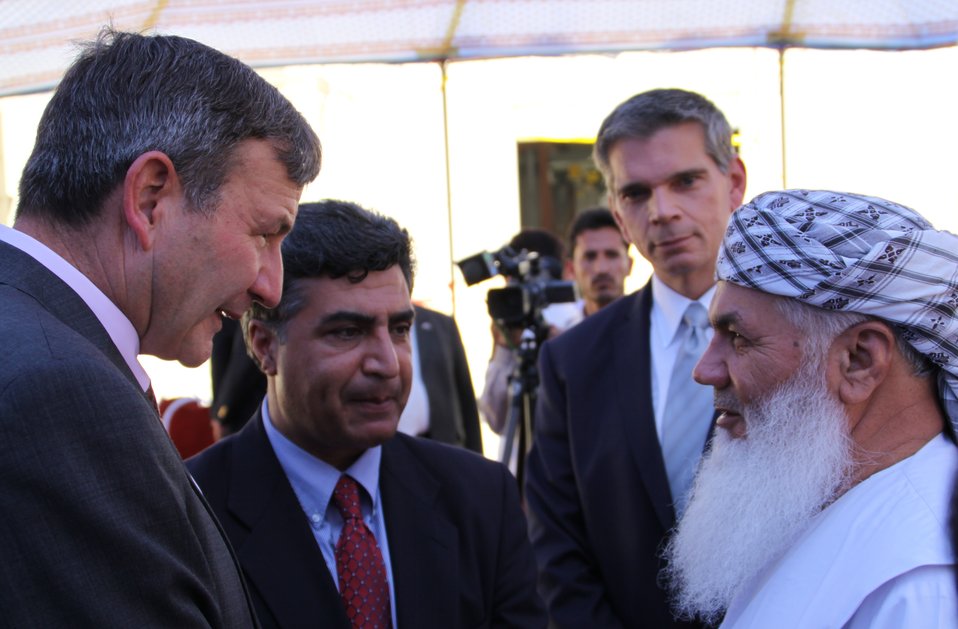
105 MW Tarakhil Power Plant Handover